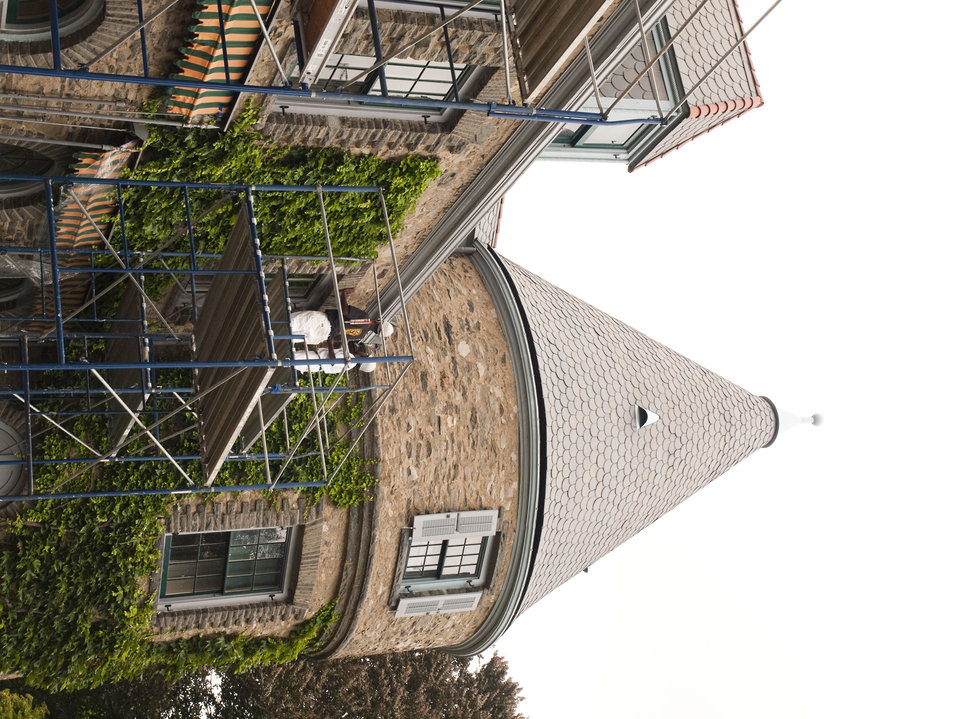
Job Corps students help to restore Grey Towers National Historic Site. $2,440,000 in Recovery Act funds were allocated to repair and refurbish the house and grounds of the ancestral home of the first Chief of the Forest Service and two-term Pennsylvania governor Gifford Pinchot on Tuesday August 3, 2010 in Milford, PA. This project at the 123-year-old site repairs various deficiencies with the buildings and grounds, restores areas of the historic landscape, improves visitor safety and site security, provides a more sustainable facility, and enhances the visitor experience. It helps to ensure the historic site is maintained for years to come.